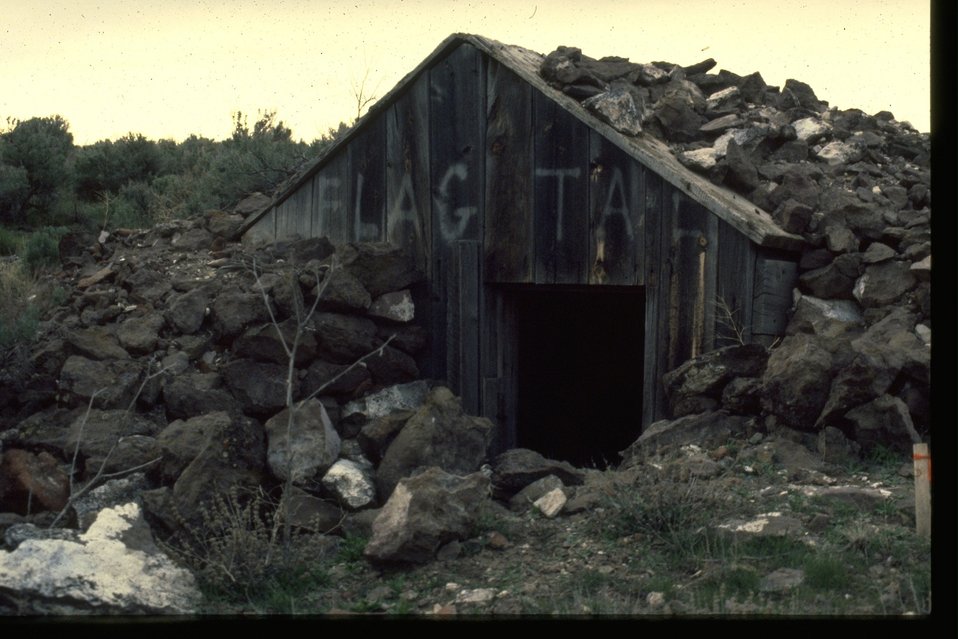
Old Flagstaff Mine near the NHOTIC.